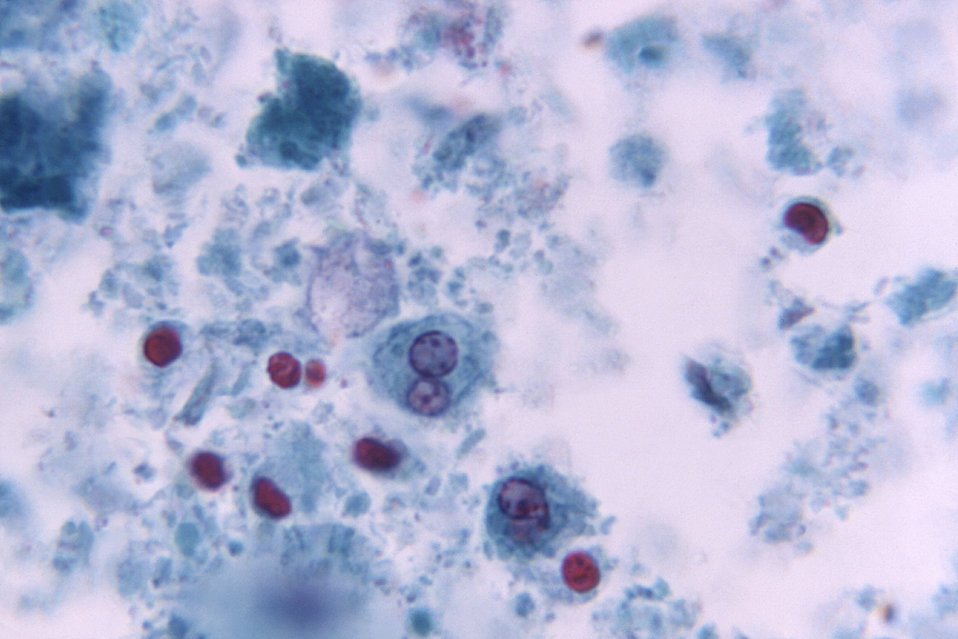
Magnified 1125X, this photomicrograph revealed some of the cellular consituents that were present in a sample of pus, which by definition, is composed of white blood cells (WBCs), otherwise known as leukocytes, cellular necrotic debris, and thin and watery serous fluid.